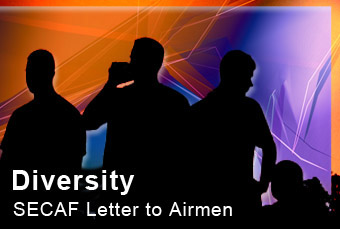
'Letter to Airmen' takes pride in AF diversity

In his latest Letter to Airmen, Secretary of the Air Force Michael B. Donley focuses on Air Force diversity.